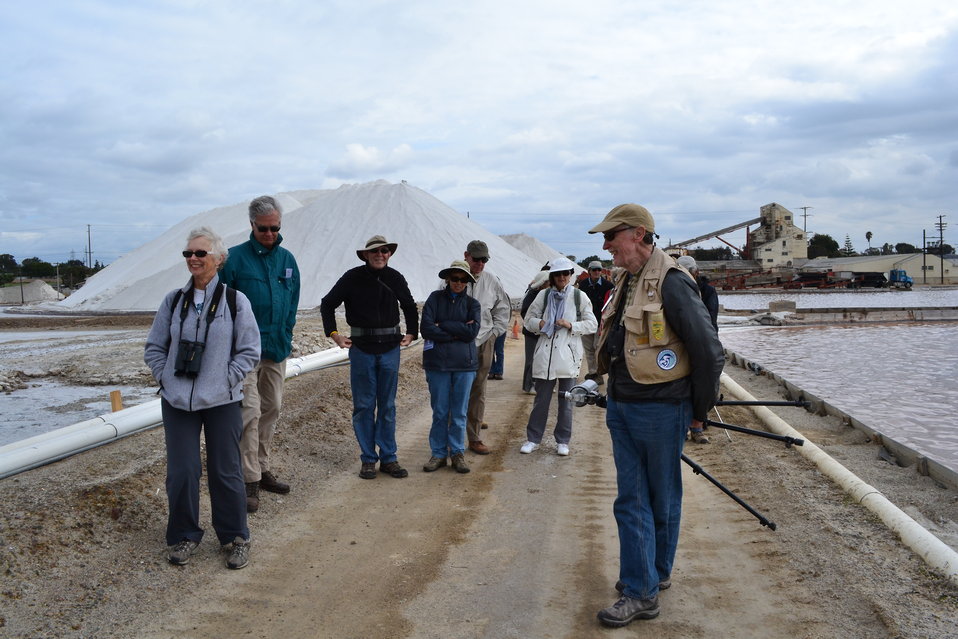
Audubon's Salt Works Nature Tours

San Diego Audubon board member and docent leader Phil Pryde leads visitors on an a rare public tour on the salt ponds within the Refuge